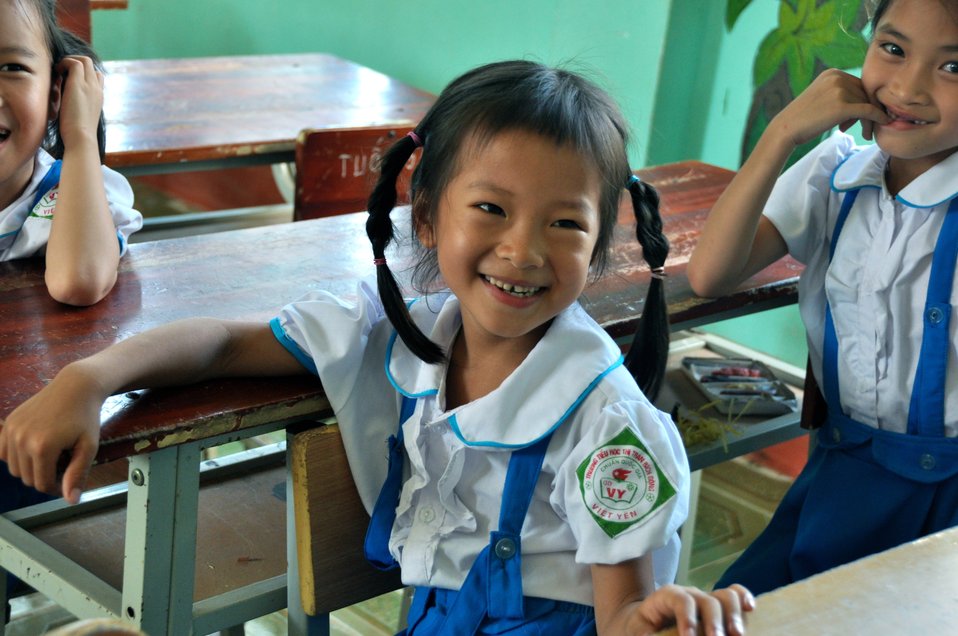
USAID supports deworming education and medication distribution in Bac Giang Province

May 20, 2013